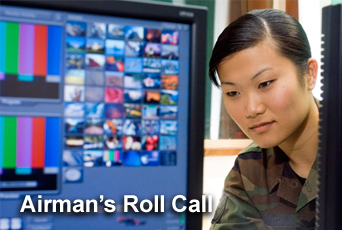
Asian-Pacific Heritage Month

This week's Airman's Roll Call focuses on the contributions Asian-Pacific American have made to the country and the history of Asian-Pacific Heritage Month.